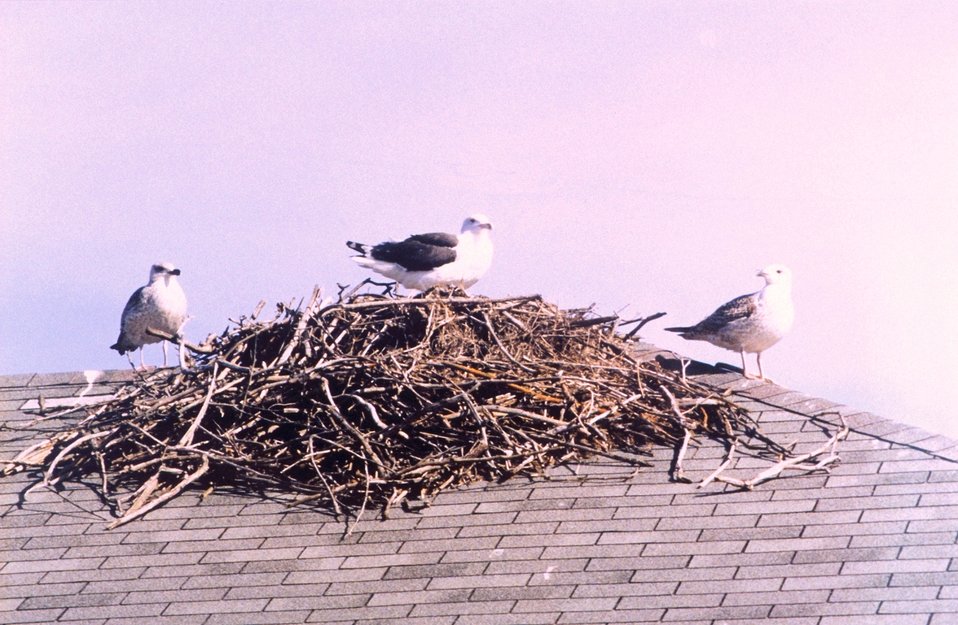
Sea gulls on a deserted osprey nest.